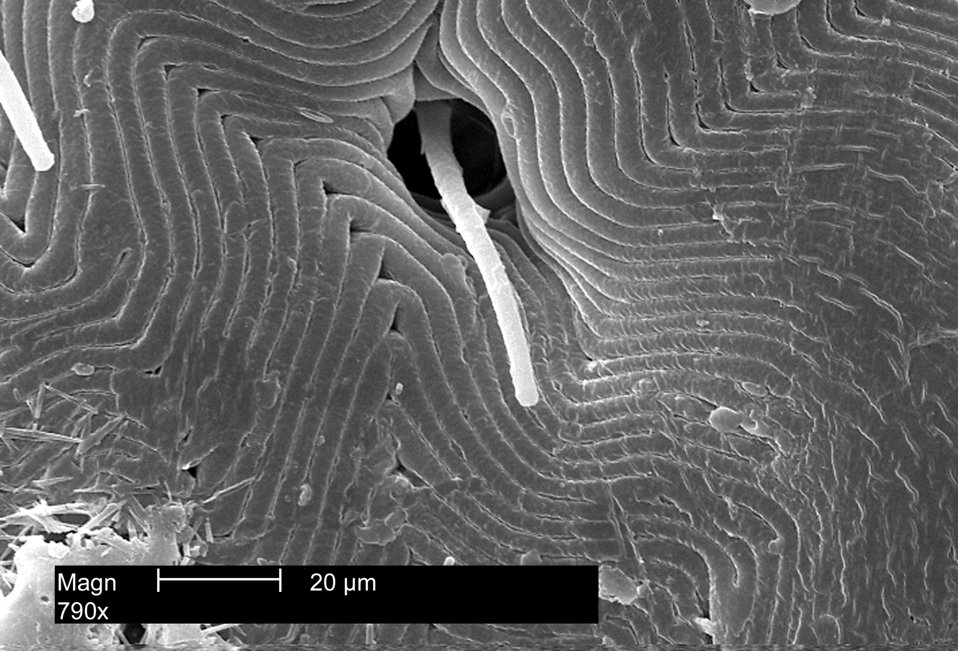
Dorsal view of the back of an American Dog Tick, Dermacentor variabilis, magnified 790x.